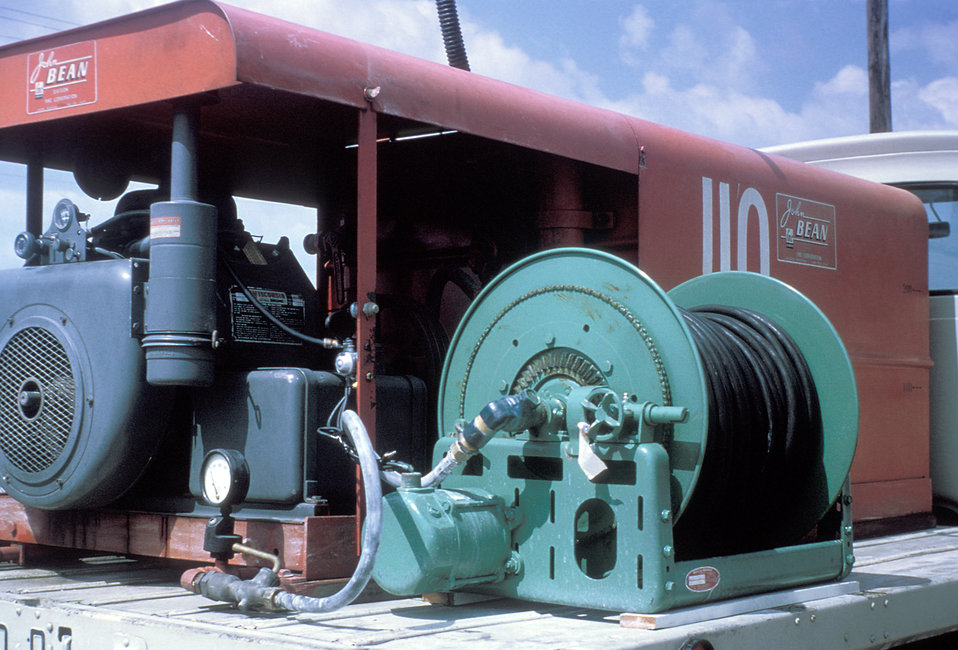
A photograph of mosquito spray truck equipment during the 1965 Aedes Aegypti eradication program in Miami, Florida.